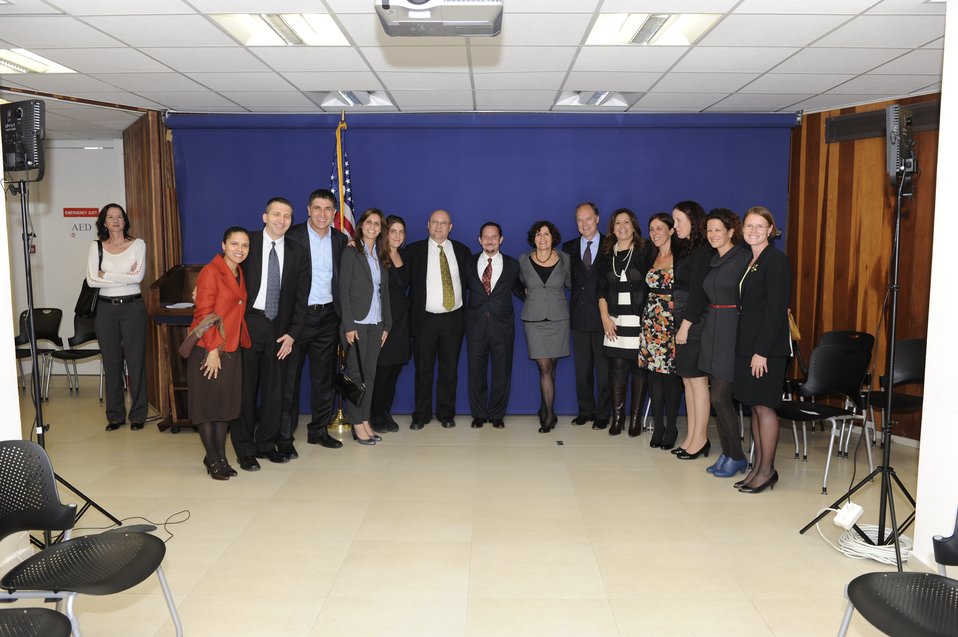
Ambassador Cunningham, Consul General Rubinstein, and CISCO Senior Manager Abzuk Celebrate the ACE Award in Jerusalem

U.S. Ambassador to Israel James Cunningham, U.S. Consul General to Israel Daniel Rubinstein, and Cisco Senior Manager Zika Abzuk, linked via digital video conference with the Secretary of State's Award for Corporate Excellent (ACE) event in Washington, D.C., celebrate the Award at a Jerusalem event in Israel, December 17, 2010.